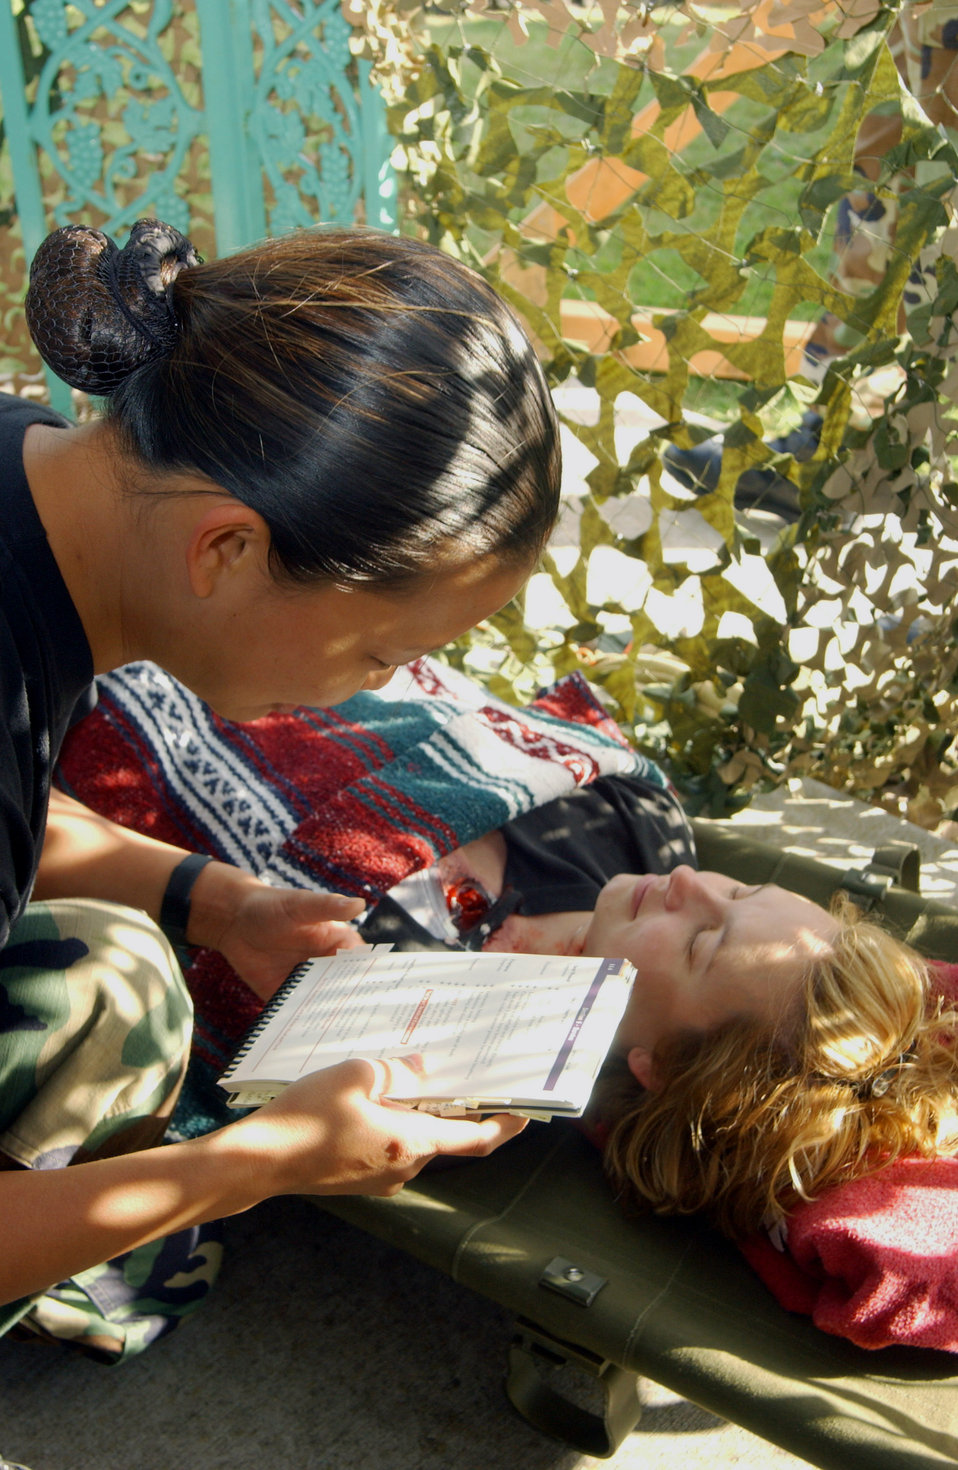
Practice makes perfect

LAJES FIELD, Azores - First Lt. Catherine Lee reads her Airman's Manual while administrating self aid and buddy care to Staff Sgt. Corey Kenney during Warrior Day here April 30. Warrior Day is a competition held once a quarter where squadrons compete against one another in various events from SABC to M-16 assembly. Lieutenant Lee is with the 729th Air Mobility Squadron and Sergeant Kenney is with the 65th Medical Group.